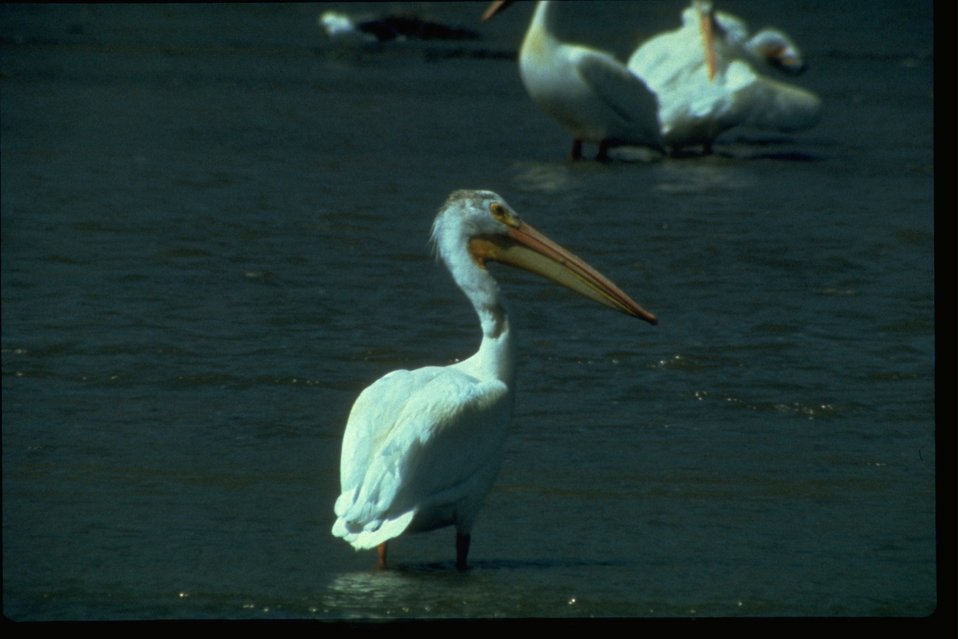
A white Pelican standing on the beach.